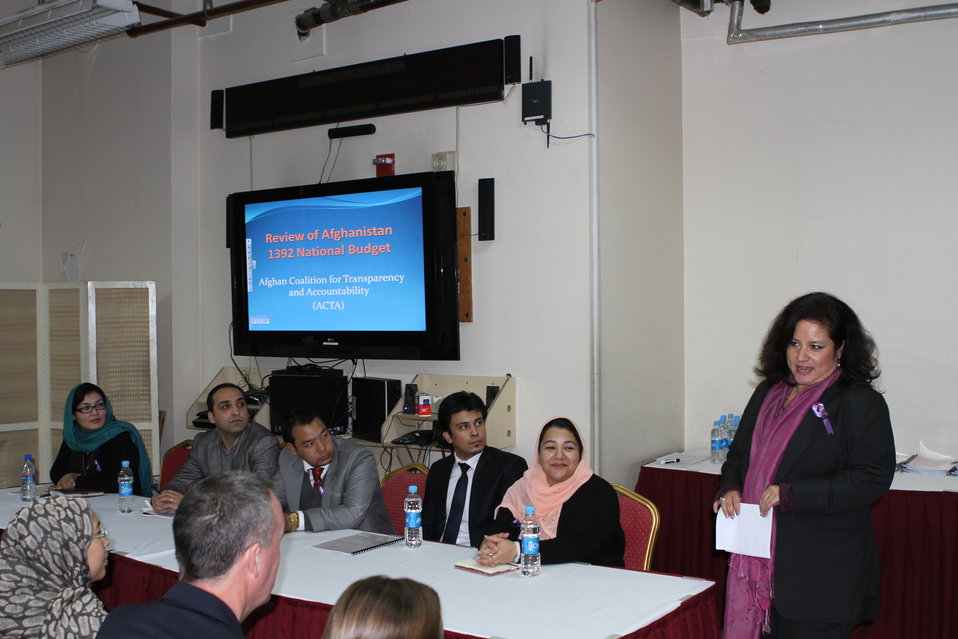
Presentation of the ACTA Civil Society analysis of the FY 1392 Afghan national budget